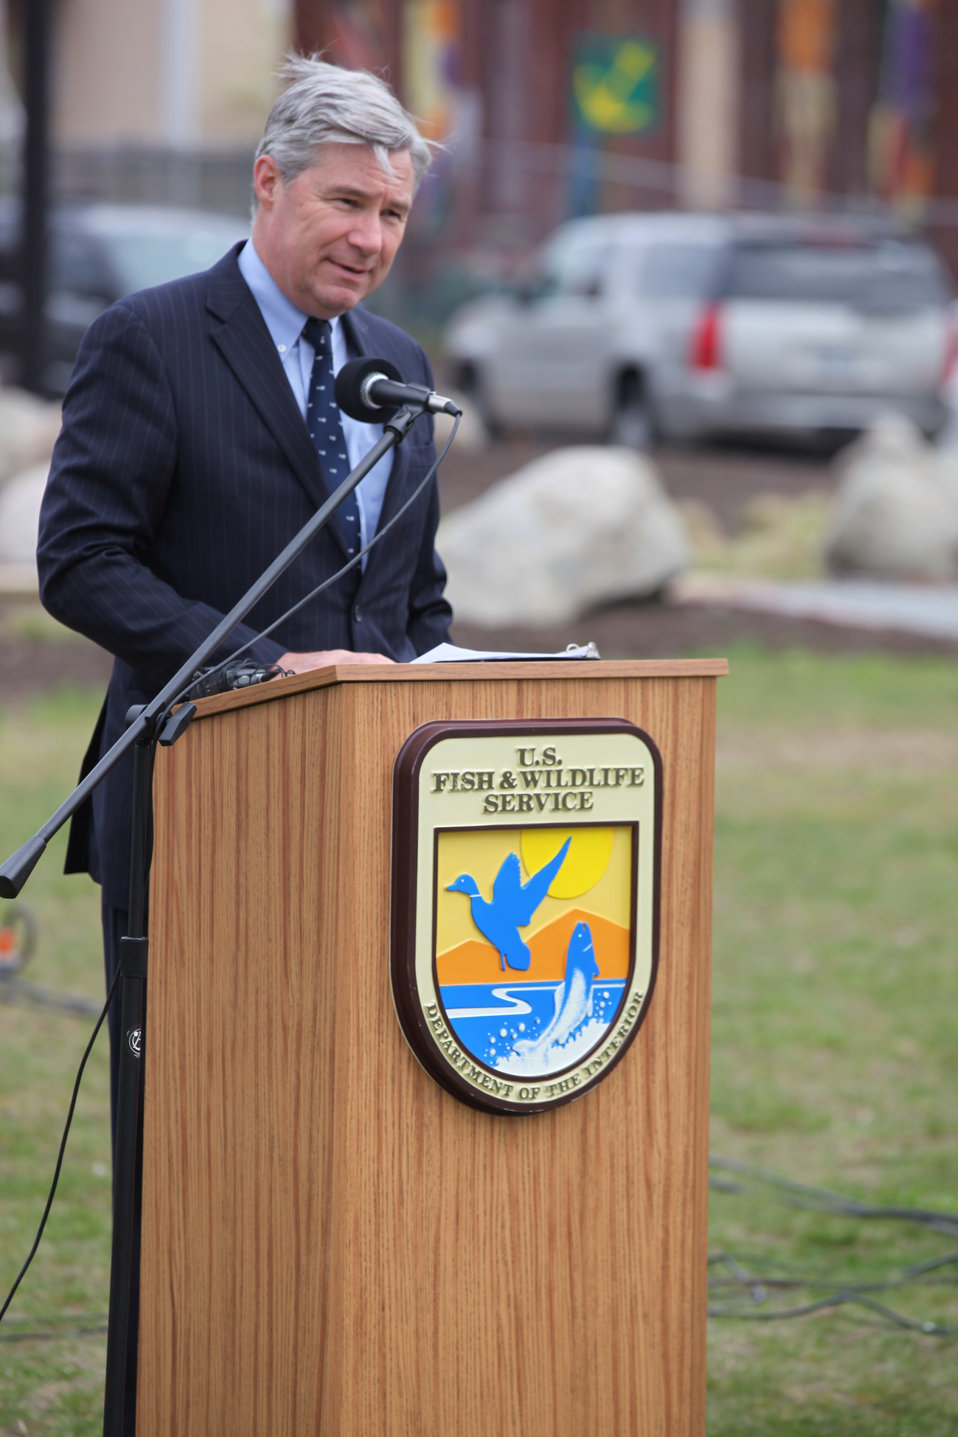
Senator Sheldon Whitehouse

Rhode Island Senator Sheldon Whitehouse speaking at the event.